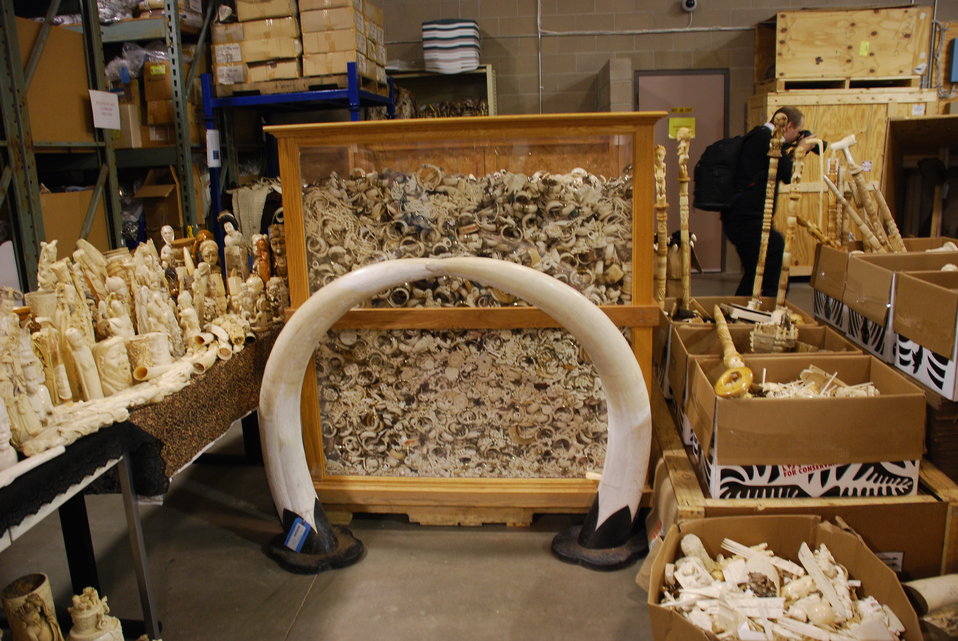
Ivory Crush 2013